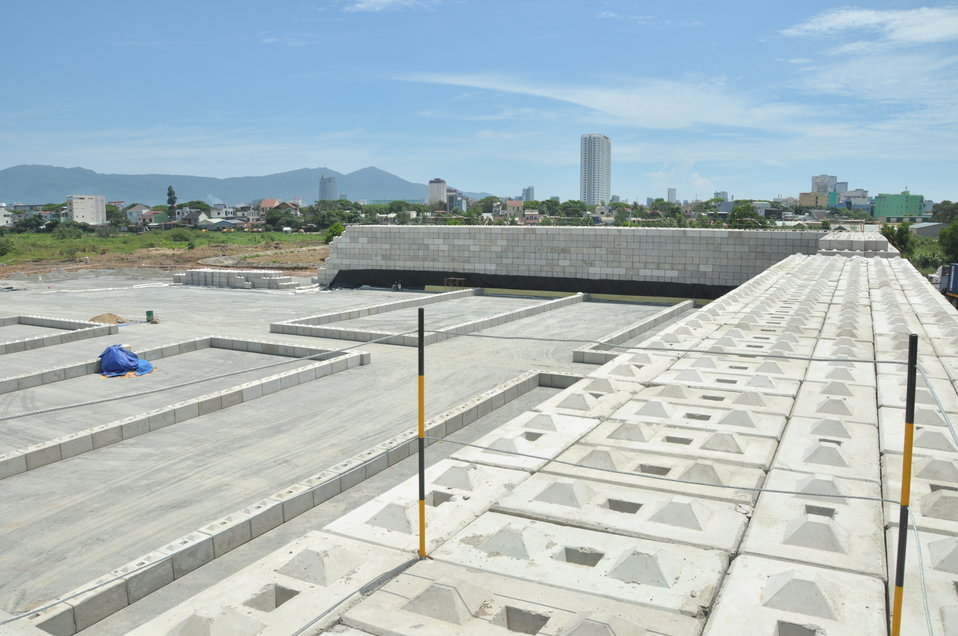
Site construction at the Environmental Remediation of Dioxin Contamination at Danang Airport

Progress at the Danang Airport remediation site
April 23, 2013